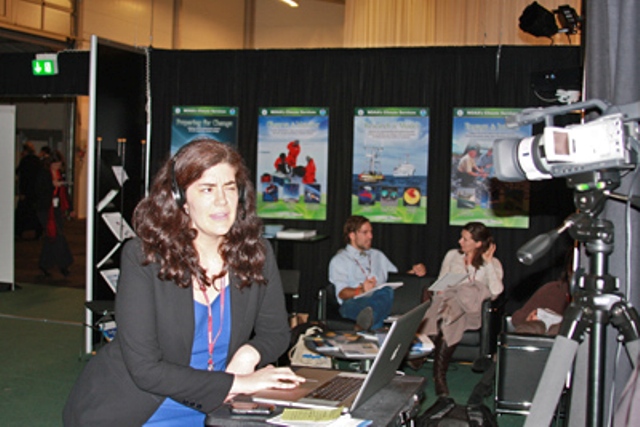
EUR Alumni Climate Challenge from Budapest Web Chat at COP-15

Elizabeth Murphy, Public Diplomacy Officer at the U.S. Department of State participates in a web chat with student participants of the EUR Alumni Climate Challenge from Budapest at the U.S. Center at COP15, Bella Center, Copenhagen, Denmark on December 11, 2009.